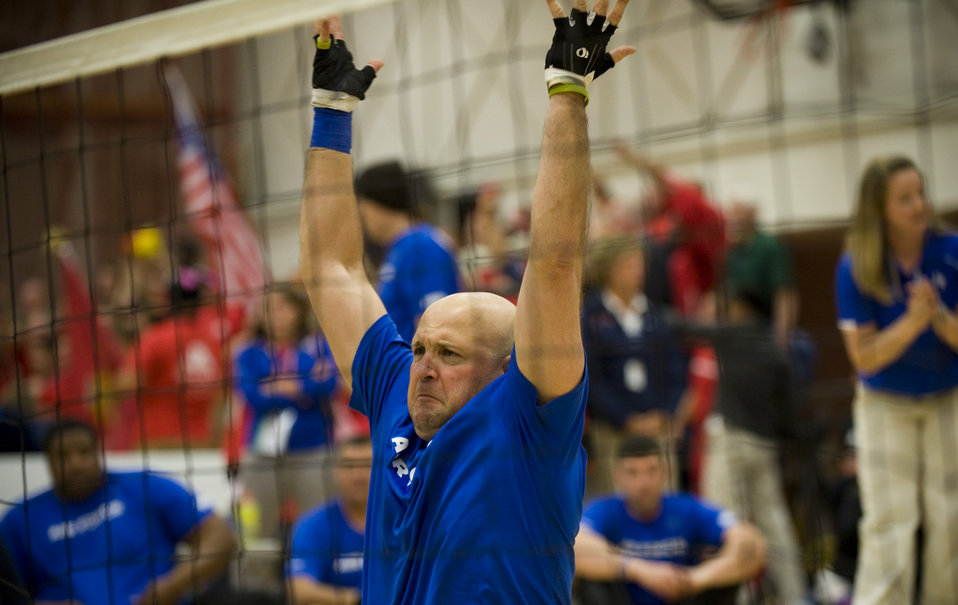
Army marches through Air Force

Chief Master Sgt. Damian Orslene hypes up the crowd during a close match against the Army May 19, 2011, during the the second annual Warrior Games in Colorado Springs, Colo. The Army won the series with two straight games.